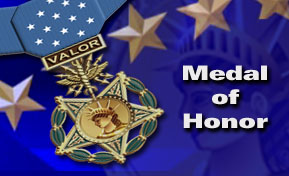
Medal of Honor graphic